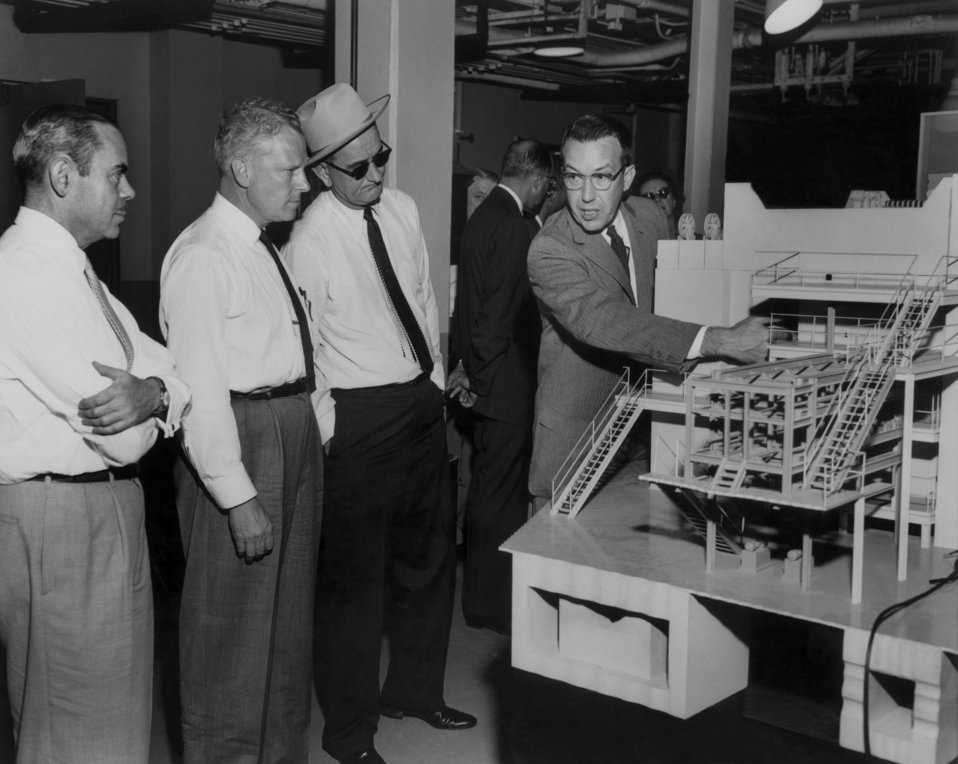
S.R. Sapirie, Senator Albert Gore, Senator Lyndon Johnson, Dr. John Swartout, Looking at Model of Graghite Reactor at Oak Ridge National Lab.

58-0930B DOE photo by Ed Westcott

S.R. Sapirie, Senator Albert Gore, Senator Lyndon Johnson, Dr. John Swartout, Looking at Model of Graghite Reactor at Oak Ridge National Lab. Oak Ridge Tennessee 10-19-1958